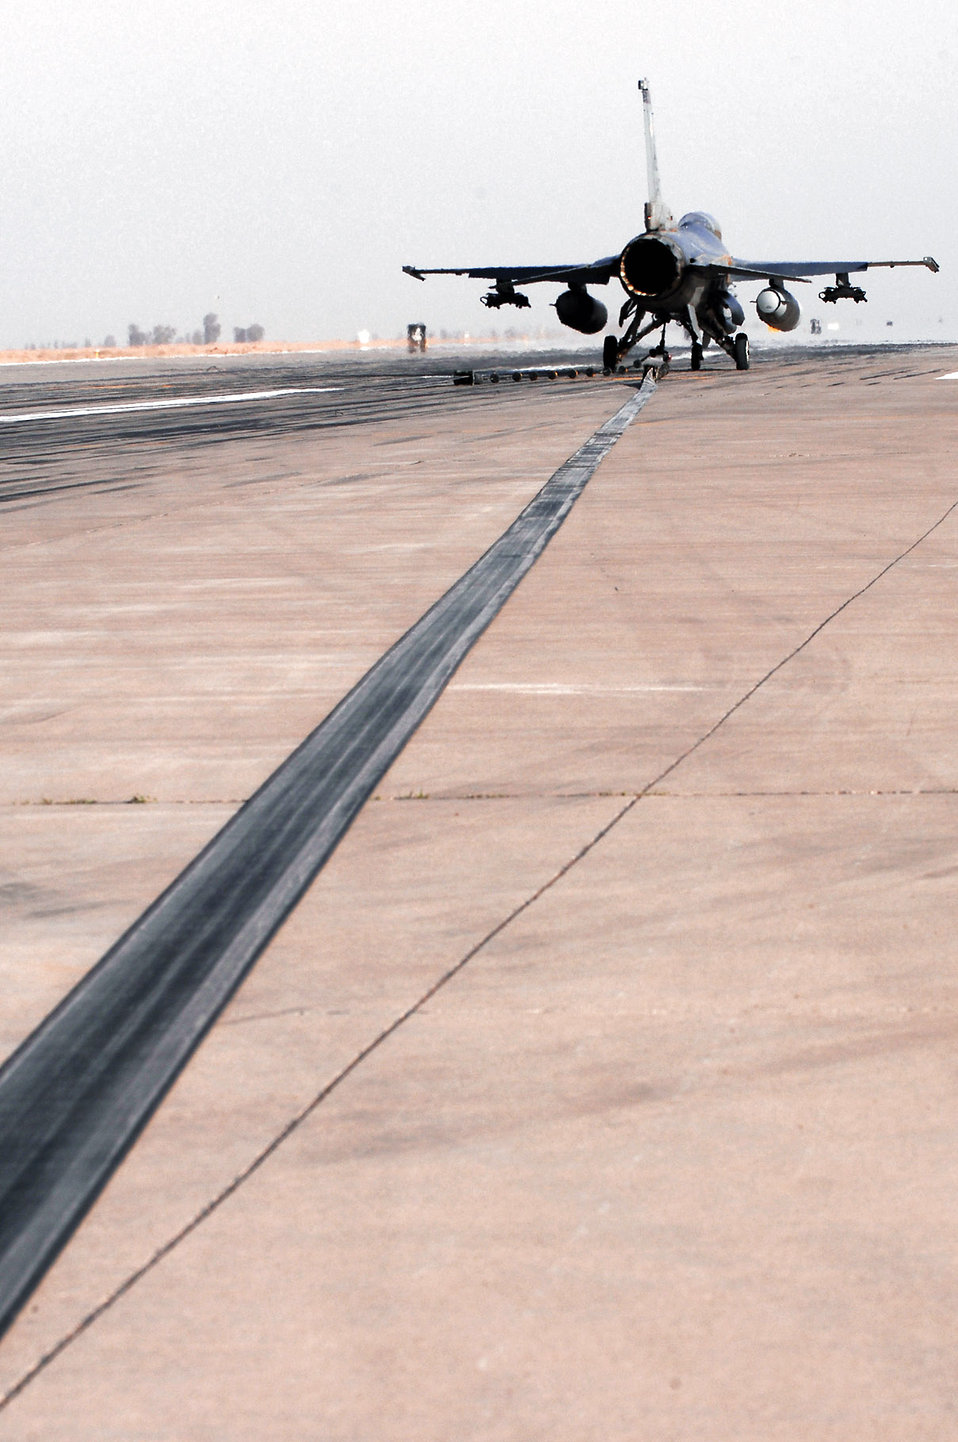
Braking action

An F-16 Fighting Falcon catches an arresting cable during a certification test of the barrier system March 16 at Balad Air Base, Iraq. The system was installed by the 332nd Expeditionary Civil Engineer Squadron and is used to bring fighter aircraft to a smooth halt during emergency landings.